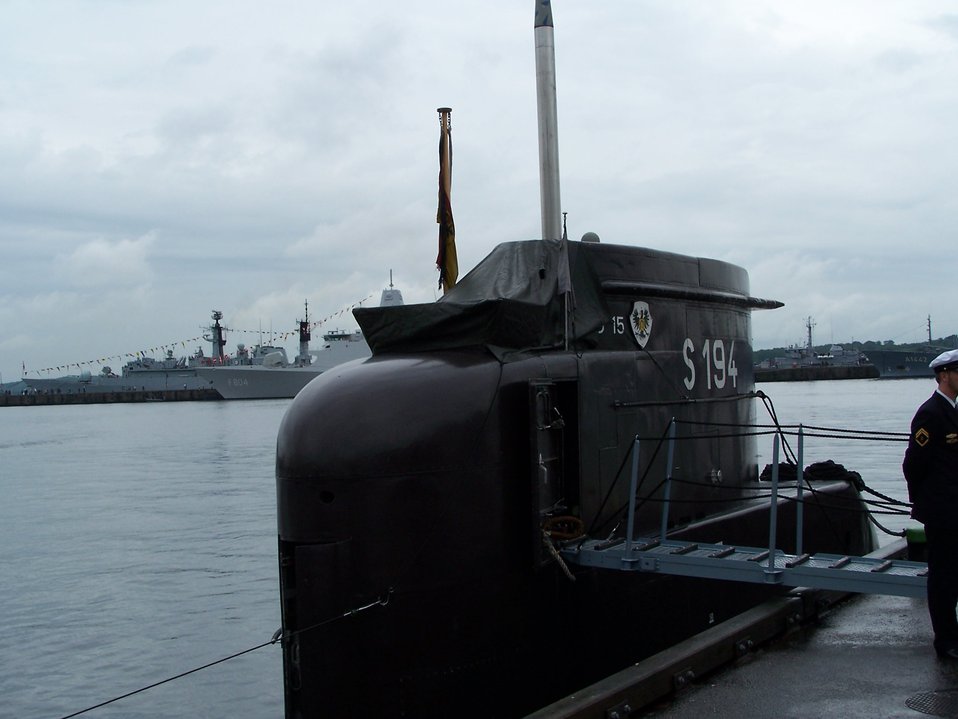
Own Work U15 at the Kiel Week 2007